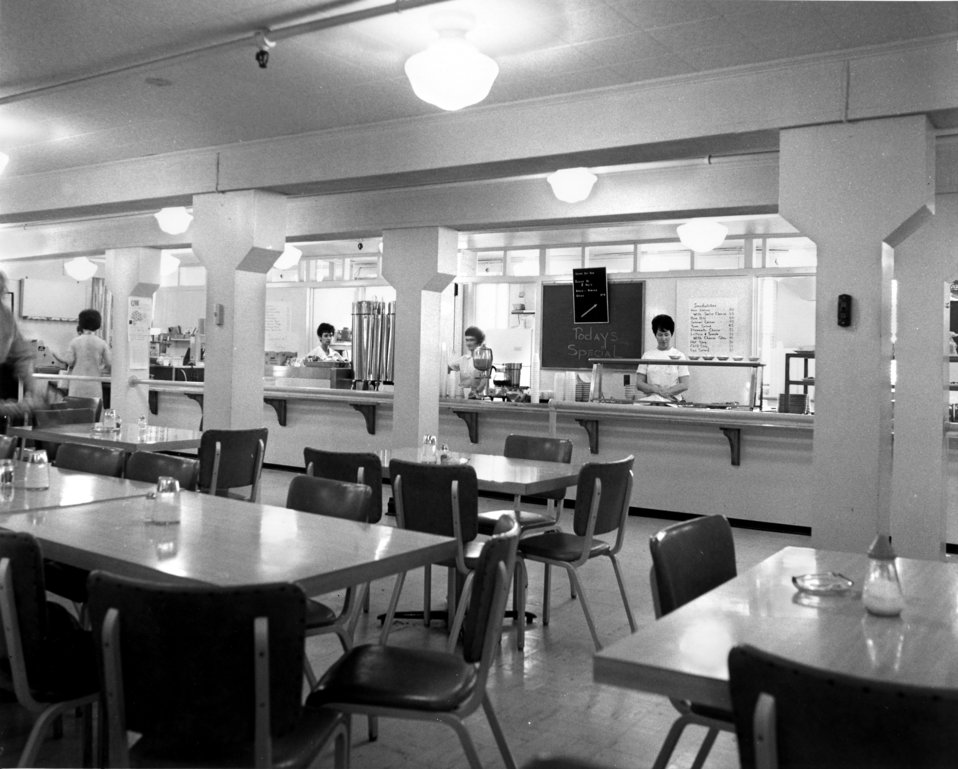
Cafeteria in Old AEC Adm. Bldg. Oak Ridge

70-162 DOE photo Frank Hoffman 6-22-1970 Oak Ridge Tennessee